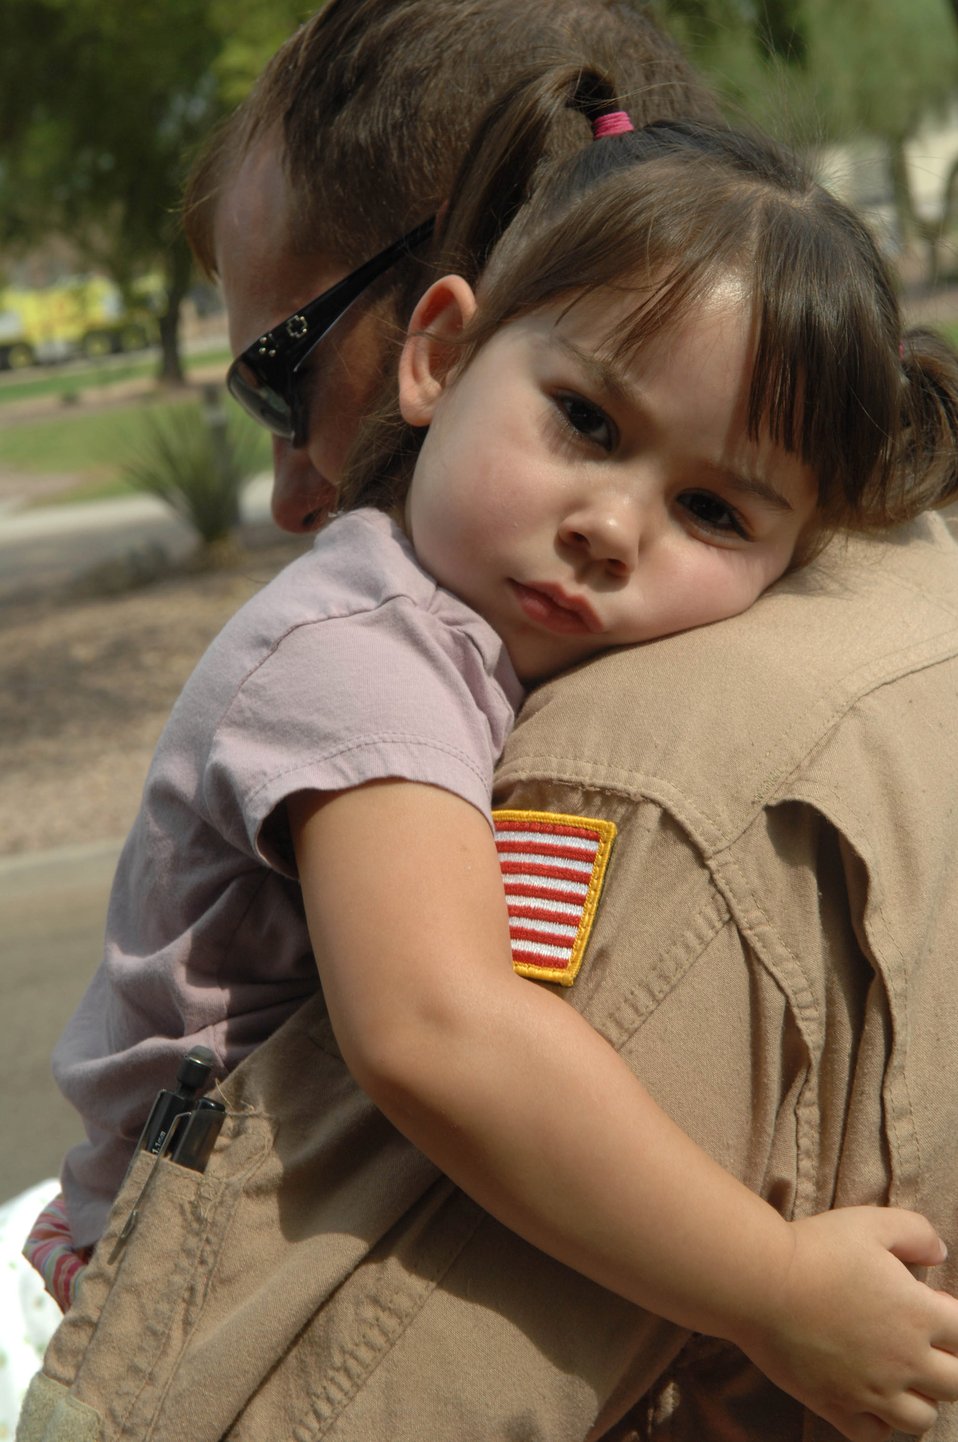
Hugs and kisses

Two-year-old Madison rests on the shoulder of her dad, Staff Sgt. Todd McKerracher, after being reunited July 9 at Davis-Monthan Air Force Base, Ariz., after returning from a deployment to Balad Air Base, Iraq. Madison is the daughter of Staff Sgt. Darlene McKerracher of the 355th Communications Squadron and Sergeant Todd McKerracher of the 55th Rescue Squadron.